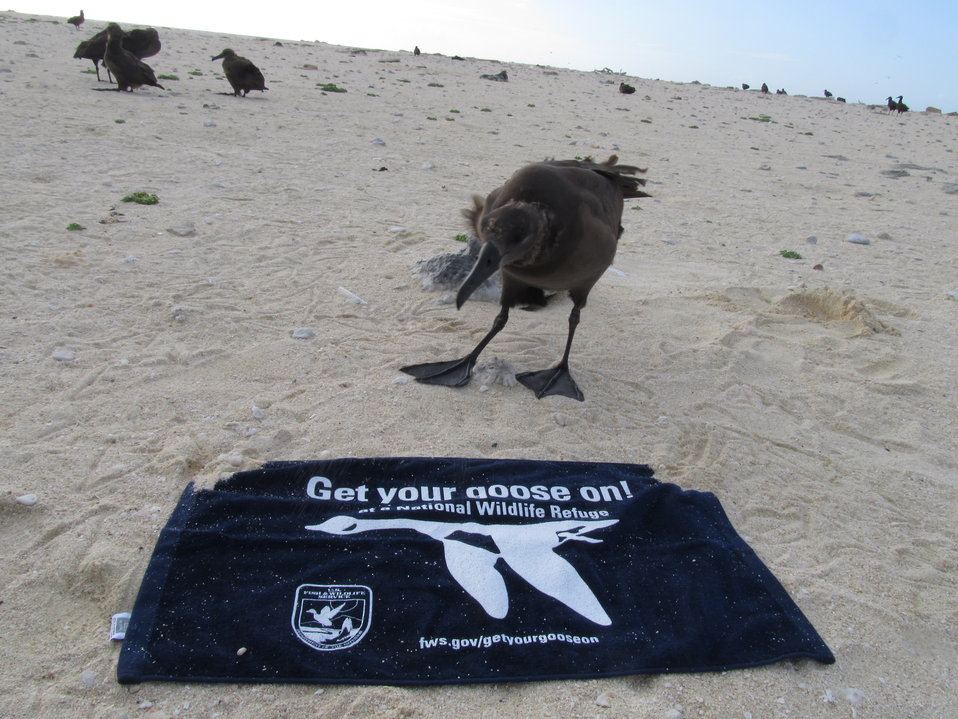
Get Your Goose On! - Albatross Style

Photo taken at Laysan Island in the Papahanaumokuakea Marine National Monument, Hawaiian Islands National Wildlife Refuge. Laysan is located approximately 800 miles northwest of Honolulu, Hawaii and is a remote field camp staffed year round for habitat restoration and population monitoring.